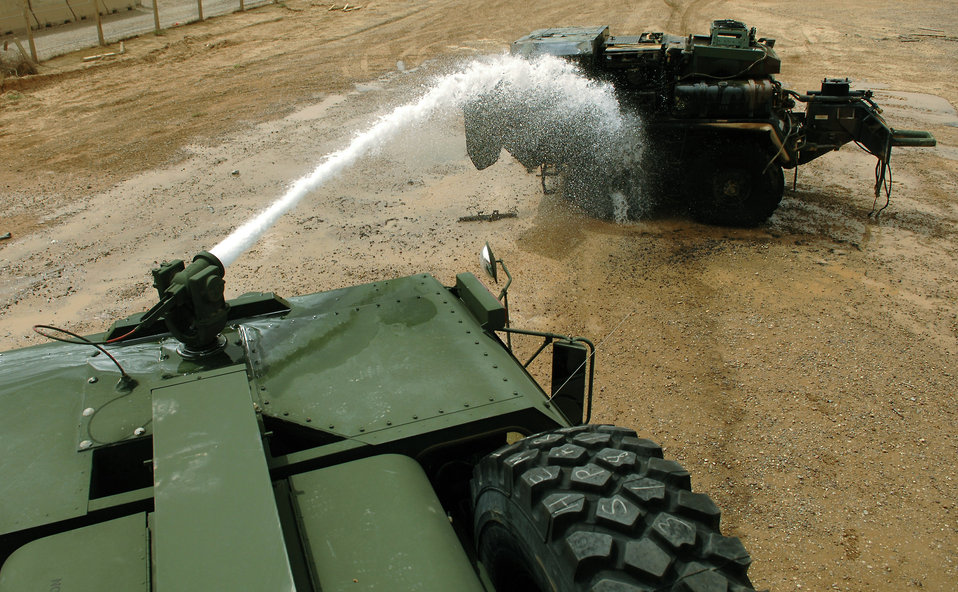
Fire it up

Members of the 332nd Expeditionary Civil Engineer Squadron and 8th Ordnance Company fire departments extinguish a vehicle fire with a hood mounted turret hose May 19 at Balad Air Base, Iraq. Due to the variety of aircraft and tactical vehicles located on Balad AB, practical application of pump and roll procedures are invaluable. Pump and roll is the process of fighting a fire while still in motion.